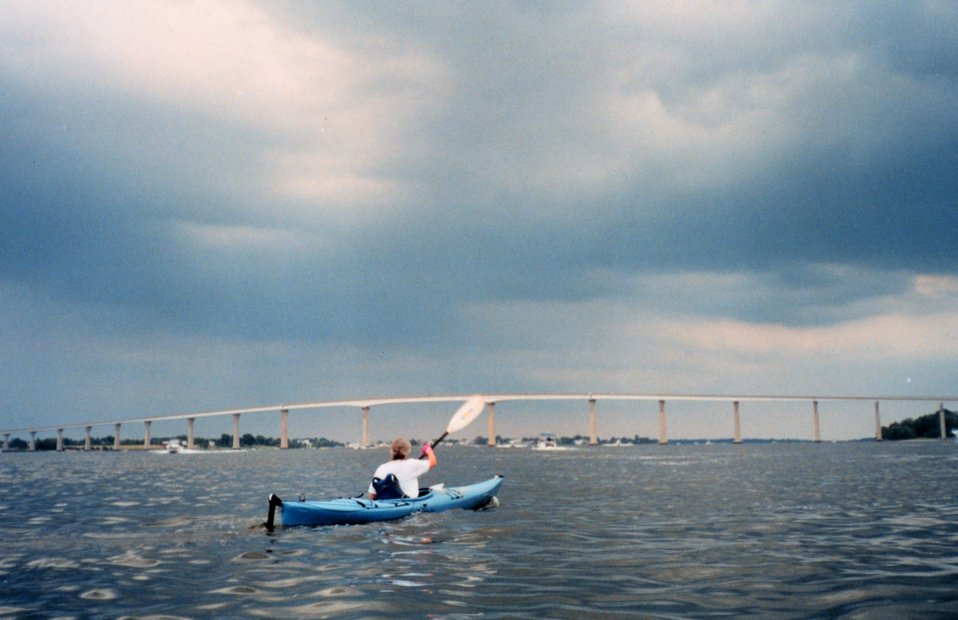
NWS employee Sarah Roy faces an onslaught of cabin cruisers and an impending storm as she nears the end of a 25-mile trek down the Patuxent River.